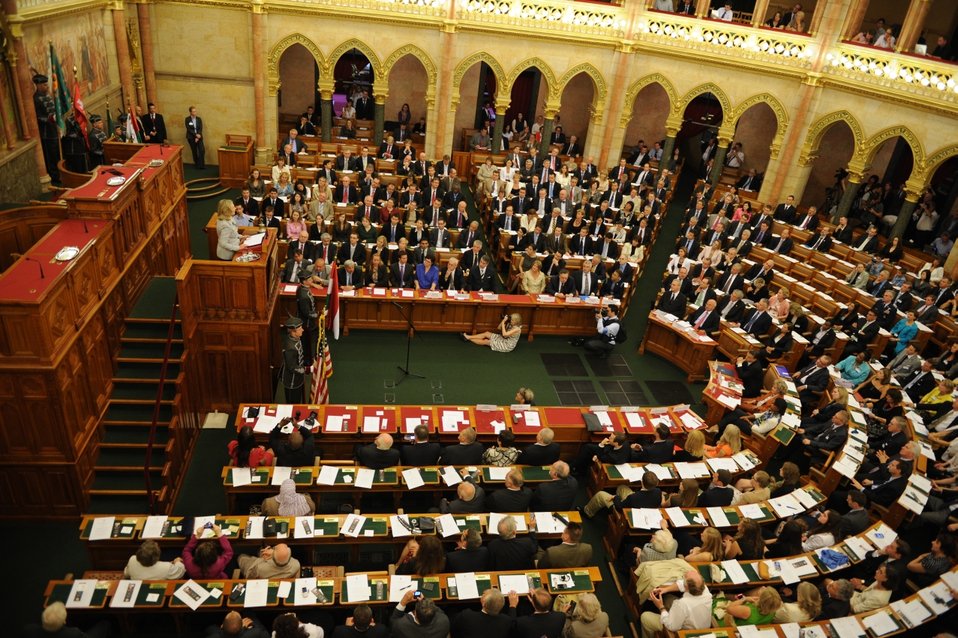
Secretary Clinton Delivers Her Speech During the Inauguration of the Tom Lantos Institute

U.S. Secretary of State Hillary Rodham Clinton delivers her speech during the inauguration of the Tom Lantos Institute in Budapest, Hungary, June 30, 2011.